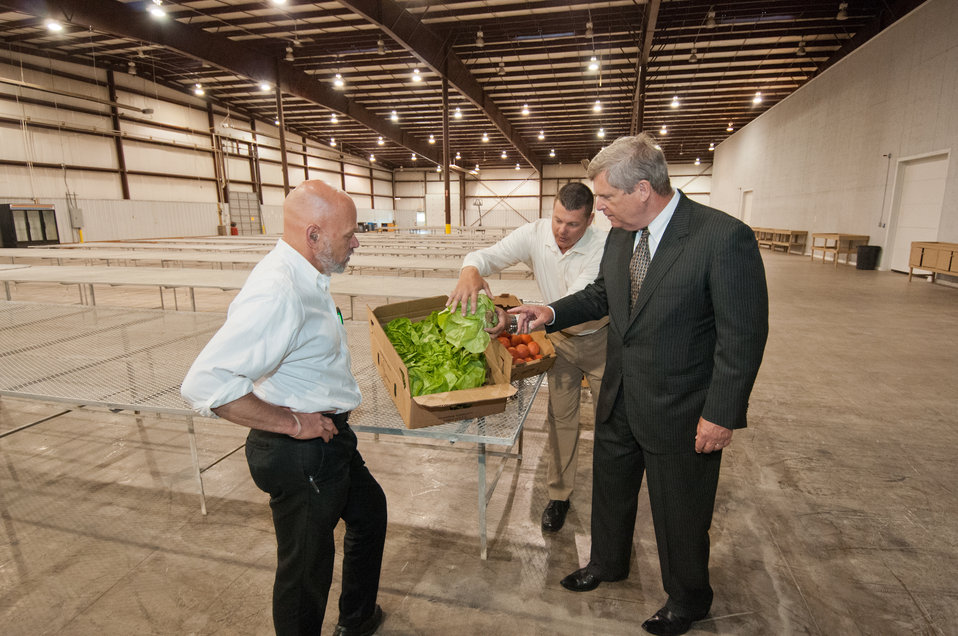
Agriculture Secretary Tom Vilsack visits Blue Ridge Produce in Elkwood, VA on Thursday, May 30, 2013. Blue Ridge Produce is a local food hub aggregating Virginia-grown fruits and vegetables for sale to wholesale customers in the Capitol region. Blue Ridge customers include supermarkets, food service companies serving institutions and regional distributors and the company recently received a contract with a restaurant franchise to supply all of their restaurants in the mid-Atlantic region with lettuce, onions, peppers and jalapeño peppers. (L to R Blue Ridge Produce Jim Epstein, Blue Ridge Produce Mark Seale, and Agriculture Secretary Tom Vilsack).